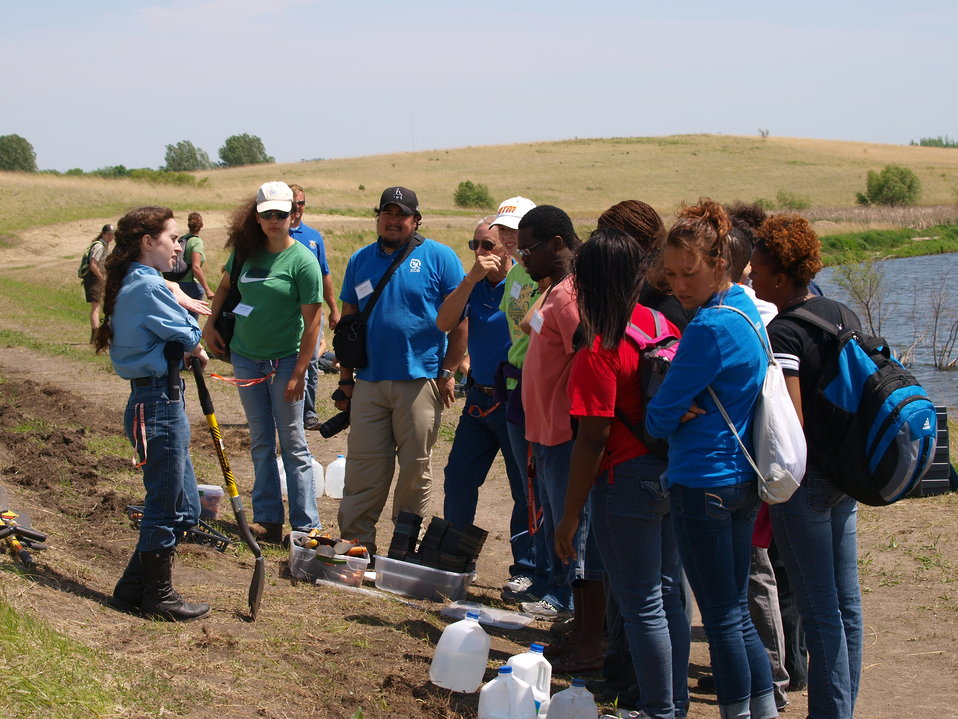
CDIP 2012 Fergus Falls

Preparing to assist 4th grade class